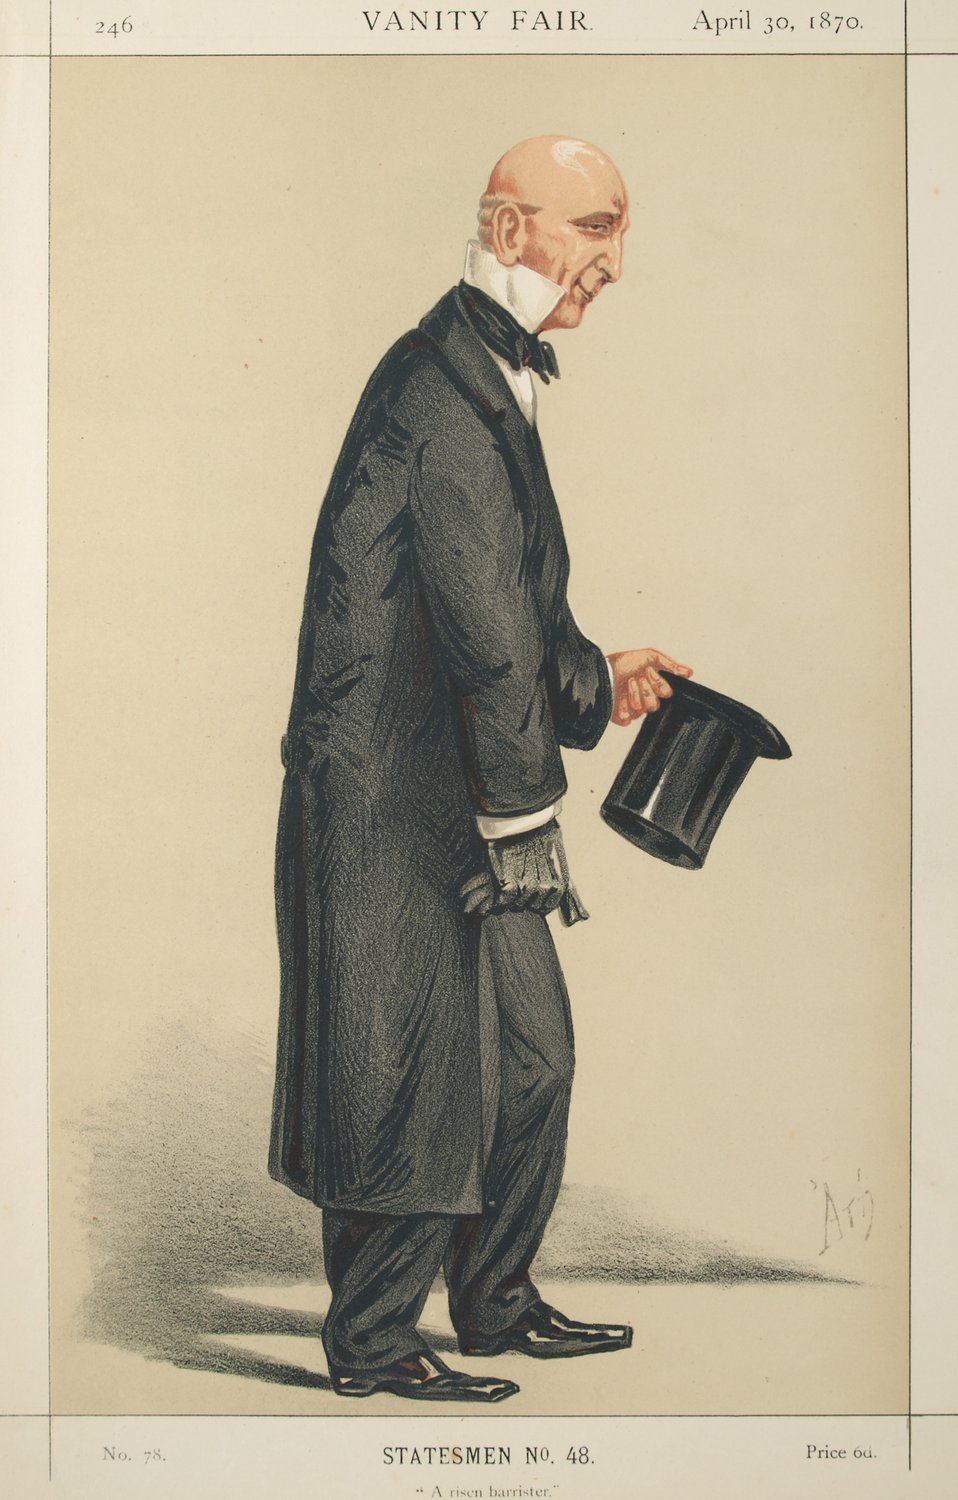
Statesmen No.48: Caricature of Sir John Coleridge.
Caption reads: 'A risen barrister.'